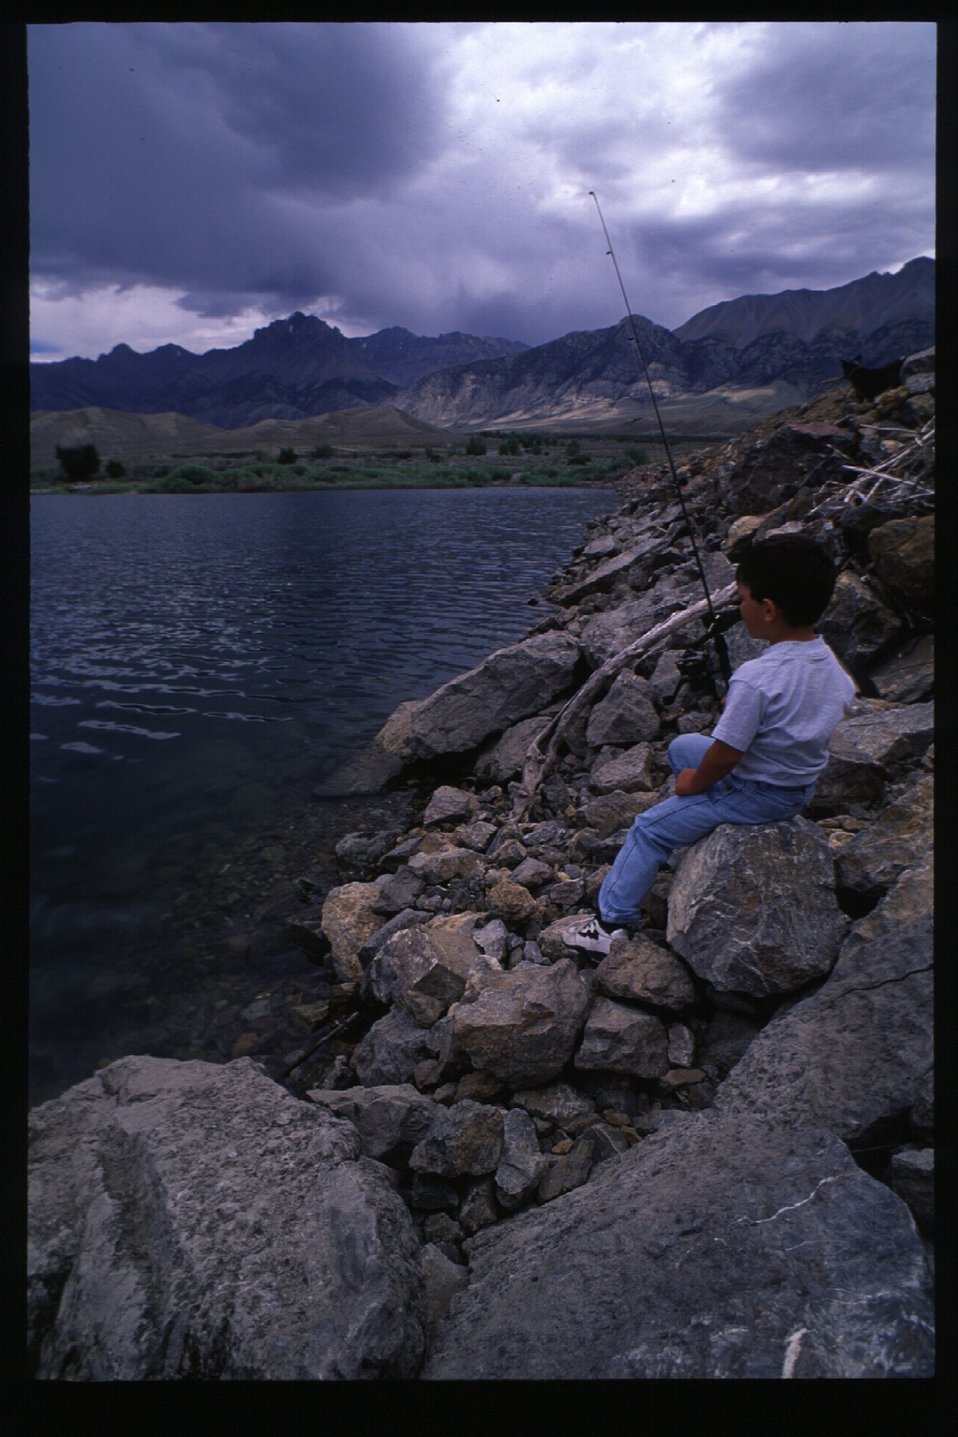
Scenic at Mackay Reservoir Fishing Challis Field Office UCSC Upper Columbia Salmon Clearwater District